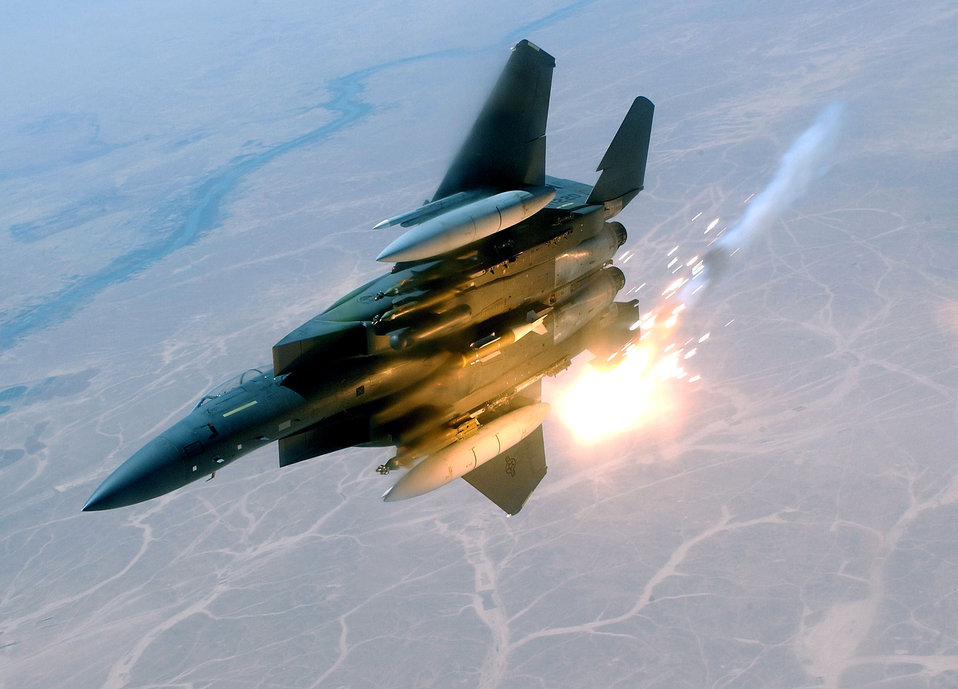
Light in the sky

SOUTHWEST ASIA- An F-15E Strike Eagle deployed from the 492nd Fighter Squadron at Royal Air Force Lakenheath, England, pops flares during a combat sortie supporting Operation Iraqi Freedom here May 6.